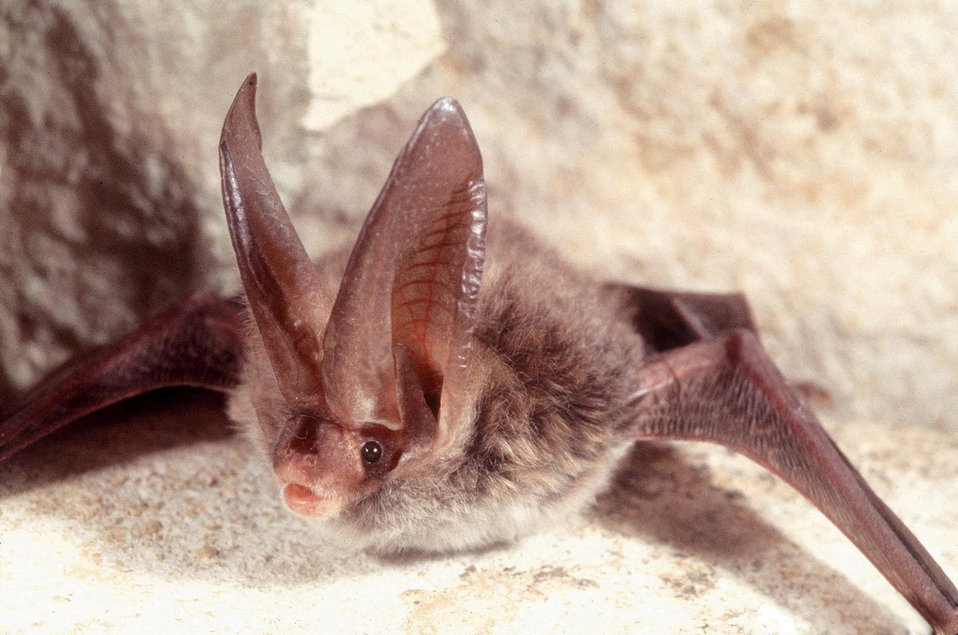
Adult Rafinesque's big-eared bat rests on a cave wall. Bats are one of nature’s many pollinators for flowers and crops and are crucial in production for fruits and vegetables.